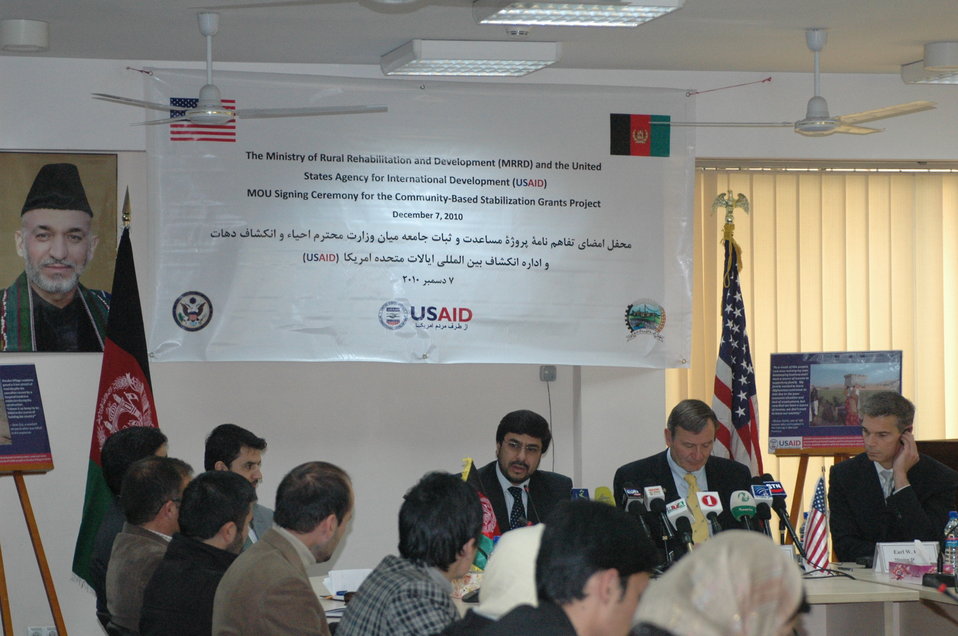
Community Based Stabilization Grants Ceremony, December 7, 2010